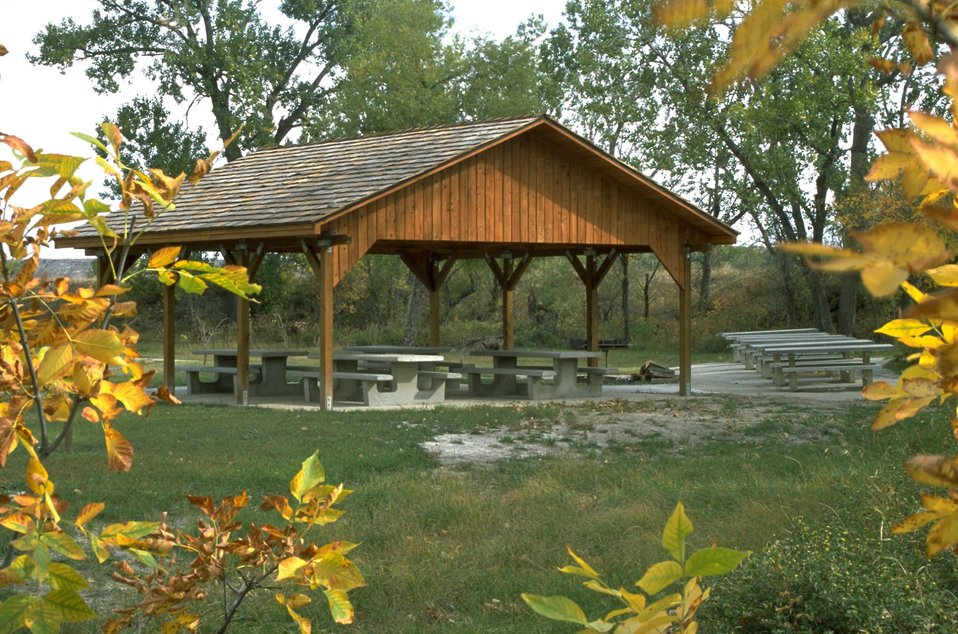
Group picnic shelter framed with autumn leaves